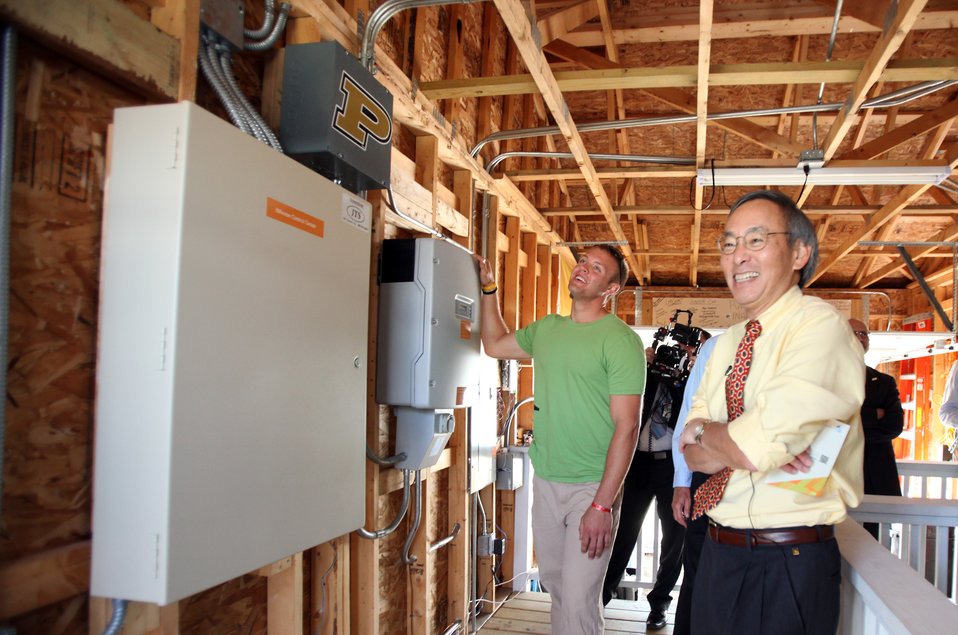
ergy Secretary Chu Explores Purdue's Garage

U.S. Energy Secretary Steven Chu speaks with student team member Jordan Wallpe, left, as he demonstrates the inverter system showcased in Purdue University's garage at the U.S. Department of Energy Solar Decathlon 2011 in Washington, D.C., Friday, Sept. 30, 2011.